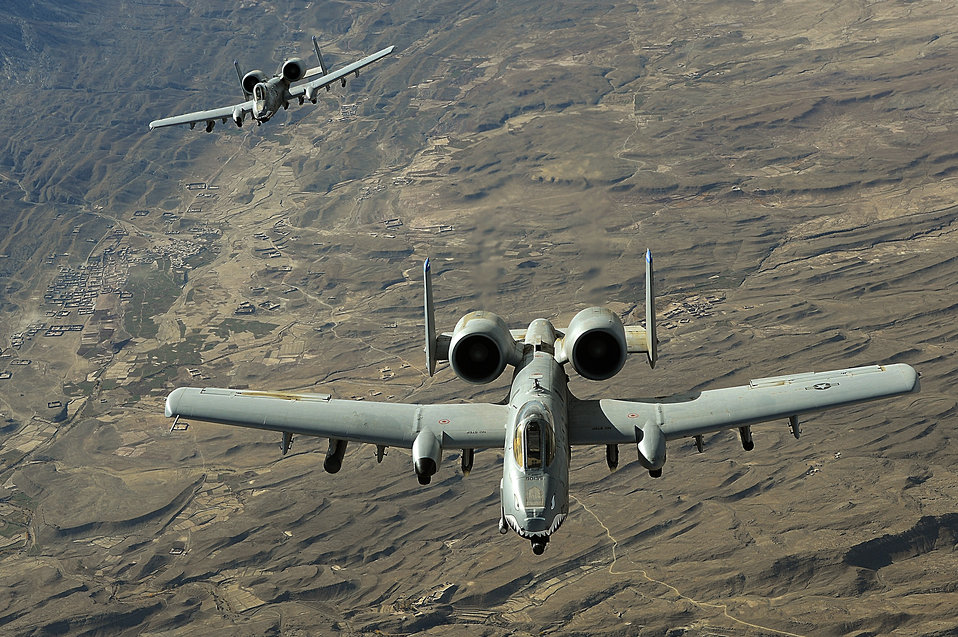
A-10s provide overwatch

Two A-10 Thunderbolt IIs fly over Afghanistan providing top cover for ground forces. A-10s perform shows of force and provide armed aerial overwatch in support of Operation Enduring Freedom.